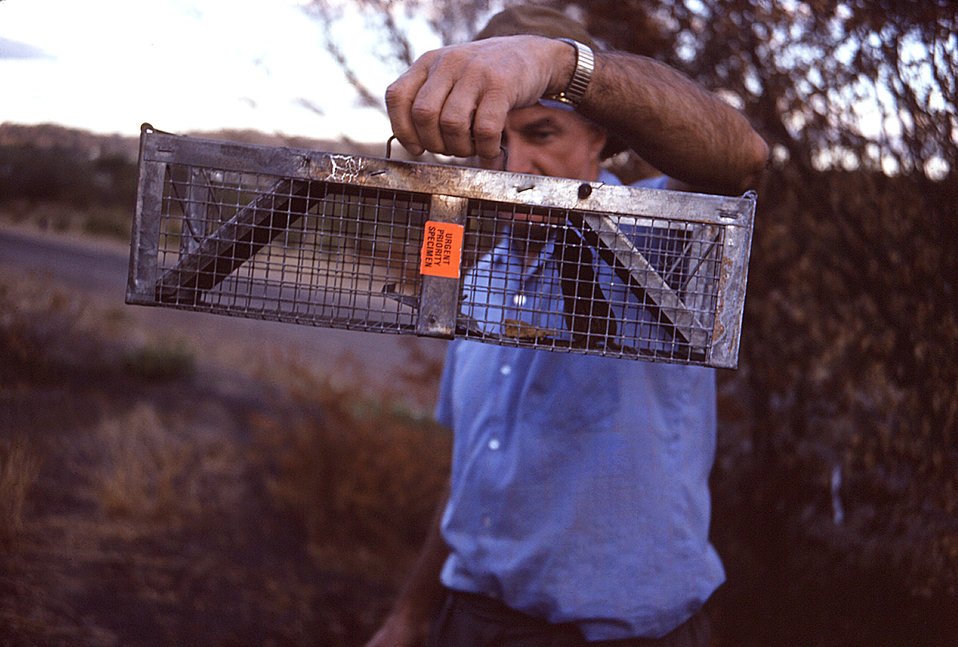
This photograph shows a trapped field mouse that was tested as part of a 1975 CDC Zimbabwe Marburg virus outbreak investigation.